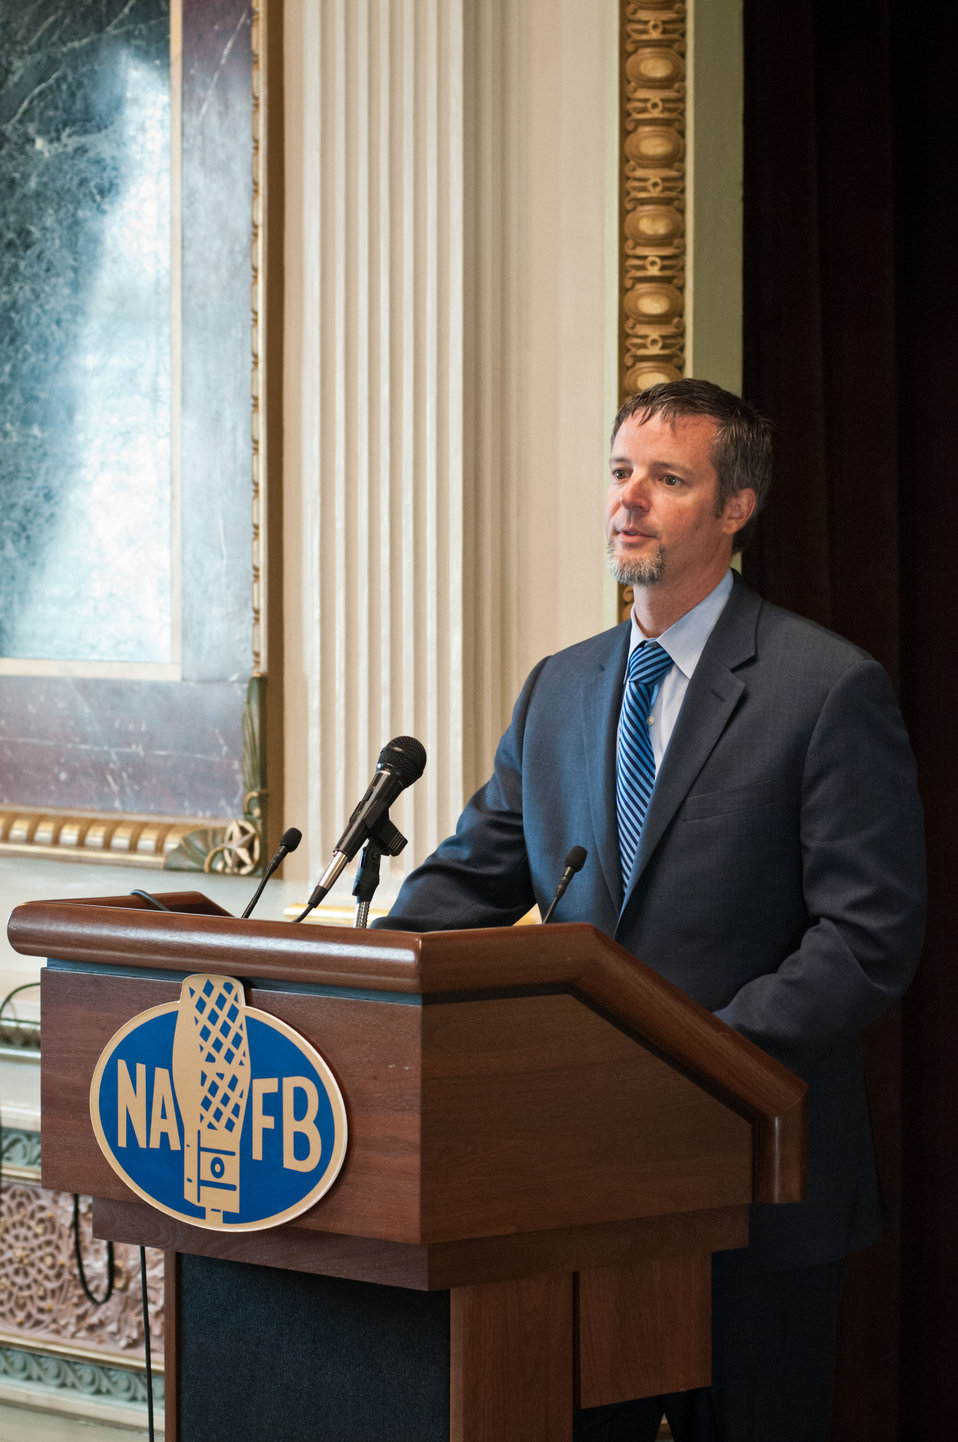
Senior Policy Advisor for Rural Affairs, White House Domestic Policy Council, Doug McKalip spoke about the Obama Administrations efforts in rural America at the Spring National Association of Farm Broadcasters (NAFB), “Washington Watch” member retreat in Washington, D.C. This year the meeting was held in the Eisenhower Executive Office Building, Indian Treaty Room on Tuesday, April 24, 2012, featuring United Sates Department of Agriculture and Obama Administration officials. This opportunity provides an occasion to highlight efforts to rebuild and revitalize rural America, including efforts for the agricultural community. NAFB is the recognized and trusted source of agricultural and rural lifestyle information for America with approximately 200 members who broadcast via radio in nearly every state in the country.